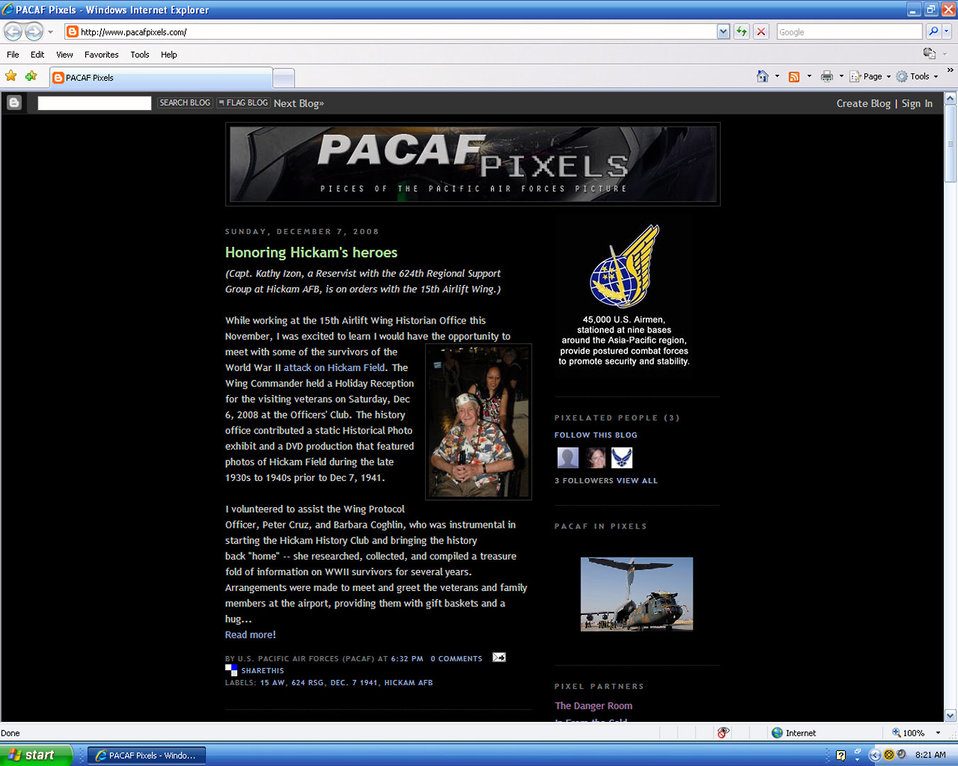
PACAF officials look to blogging to tell Air Force story

Pacific Air Forces officials are now looking to blogging and social networking as means of reaching audiences and telling the Air Force story in the Pacific with a blog site called PACAF Pixels. Unlike traditional military Web sites, the blog is designed to allow Airmen across the command to share, in a personal and authentic way, their service experiences.